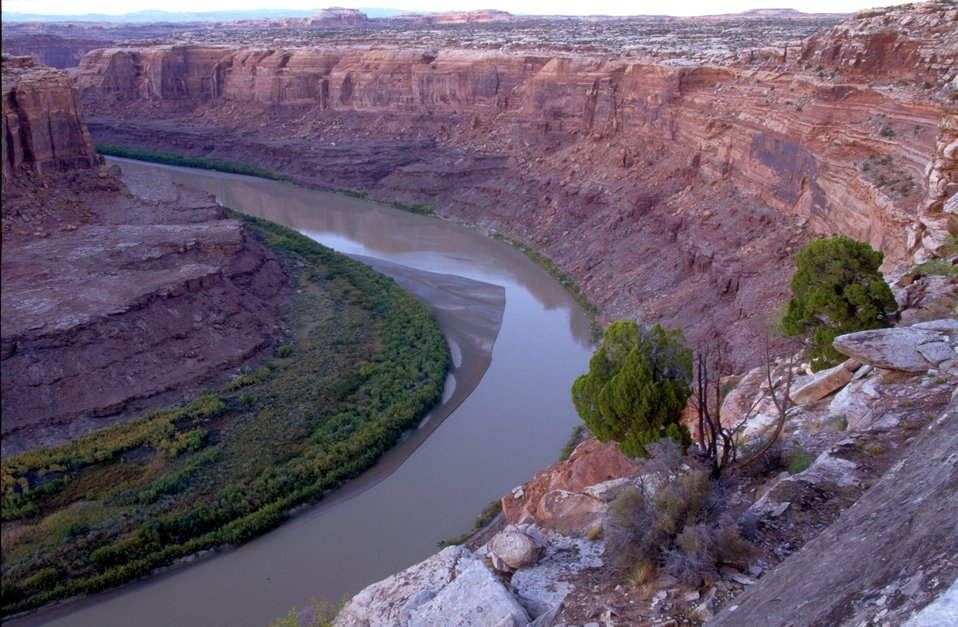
Green River at Bowknot Bend near Moab, Utah.